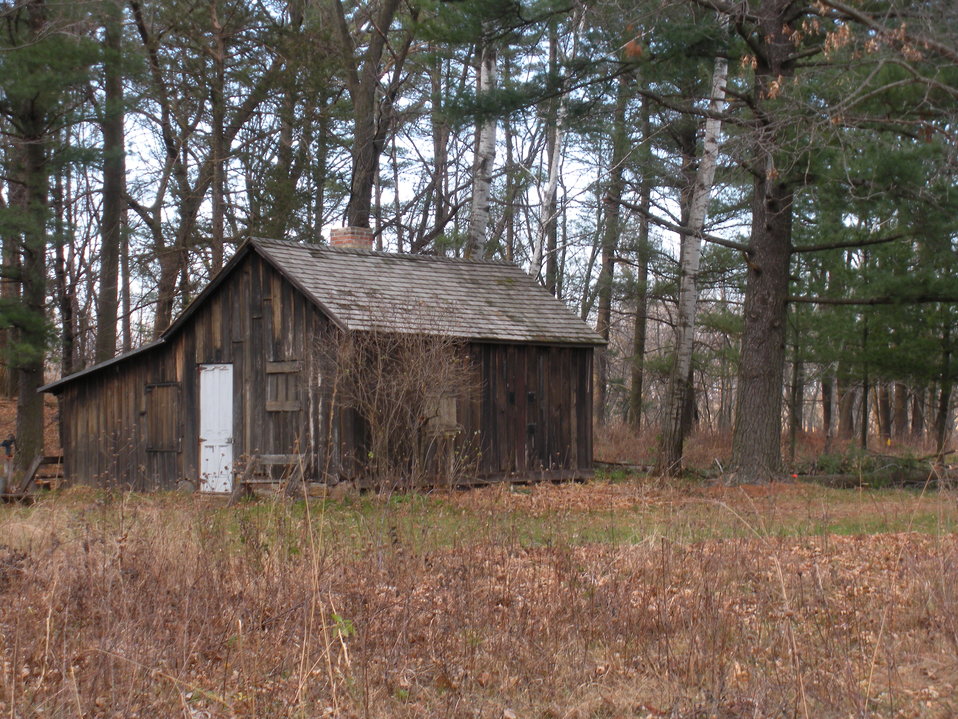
Shack Shot 4